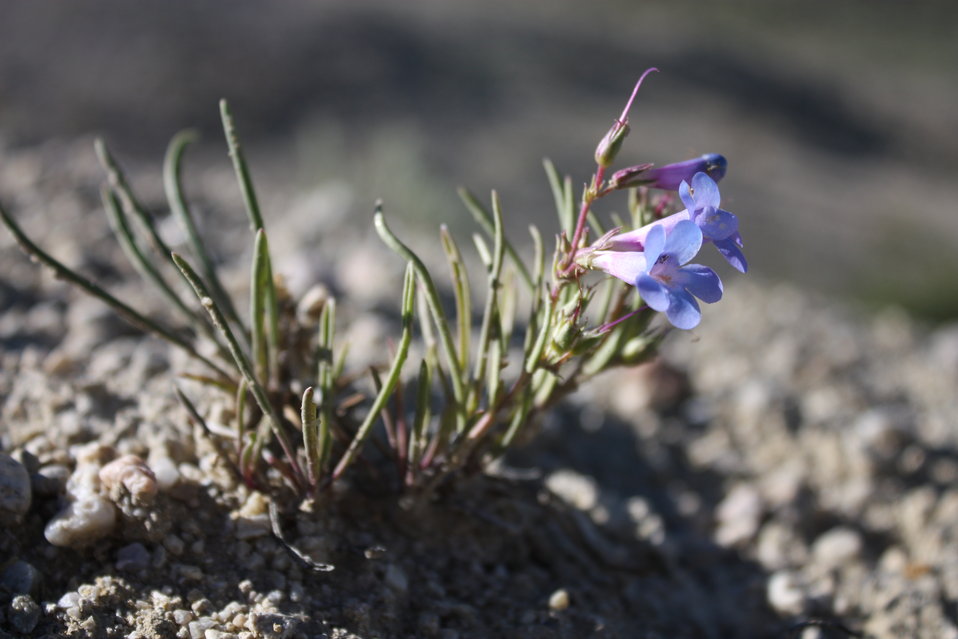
Penland beardtongue’s bright purple colored flowers shimmer in the early morning light. The Penland beardtongue (Penstemon penlandii) is a small plant with thin, needle-like leaves and bright blue to violet flowers. It is known only from a unique badland area along Troublesome Creek extending 4 miles north to south on an estimated 800 acres. In order to reproduce, this species requires pollination by native ground-dwelling, solitary bees in the genus Osmia (mason bees).